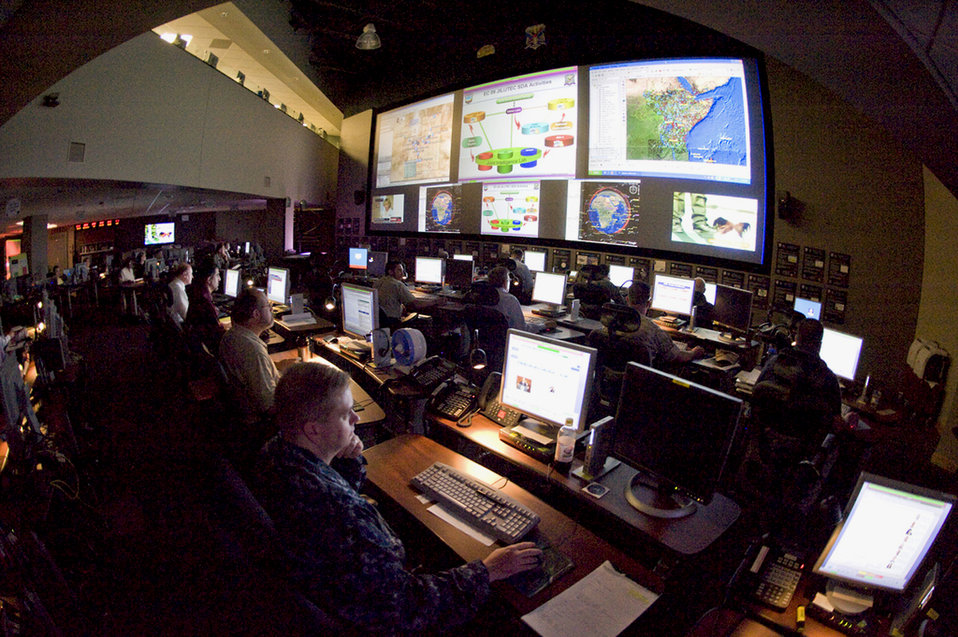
Empire Challenge 2009

Operators in U.S. Joint Forces Command's Joint Intelligence Laboratory work to support a series of Empire Challenge '09 missions. EC '09, which took place this past summer, demonstrated the joint, national and coalition interoperability of the Distributed Common Ground System.